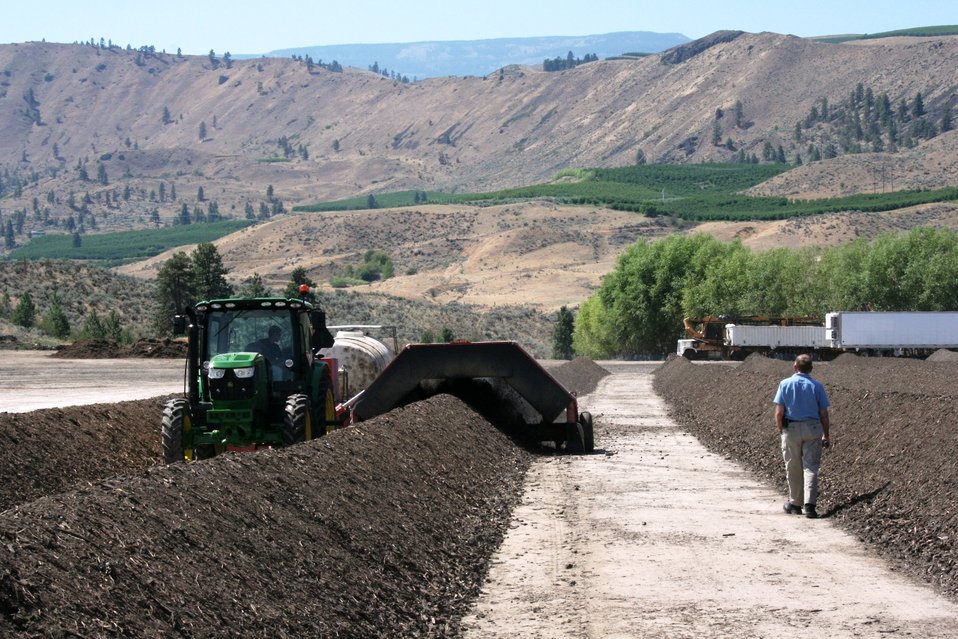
On the Road with Mike Taylor

FDA Deputy Commissioner Michael Taylor at the Stemilt Growers composting facility in Wenatchee, WA. Mike and colleagues started a five-day tour of the Pacific Northwest on Sunday, Aug. 11, 2013 -- visiting Idaho, Oregon and Washington -- to get a first-hand look at produce production and irrigation operations, and to discuss the proposed Produce Safety Rule with growers, food industry representatives and state officials. For more about Mike's multi-region tour, read these FDA Voice blog posts:

• Hearing the Concerns of Maine Growers Striving for Agricultural Diversity
• On the Road with Mike Taylor: Touring the Pacific Northwest
• On the Road with Mike Taylor, Day 2: Frank Talk in Farm Country
• On the Road with Mike Taylor, Day 3: Families and Partnerships
• On the Road with Mike Taylor, Day 4: Looking to the Future